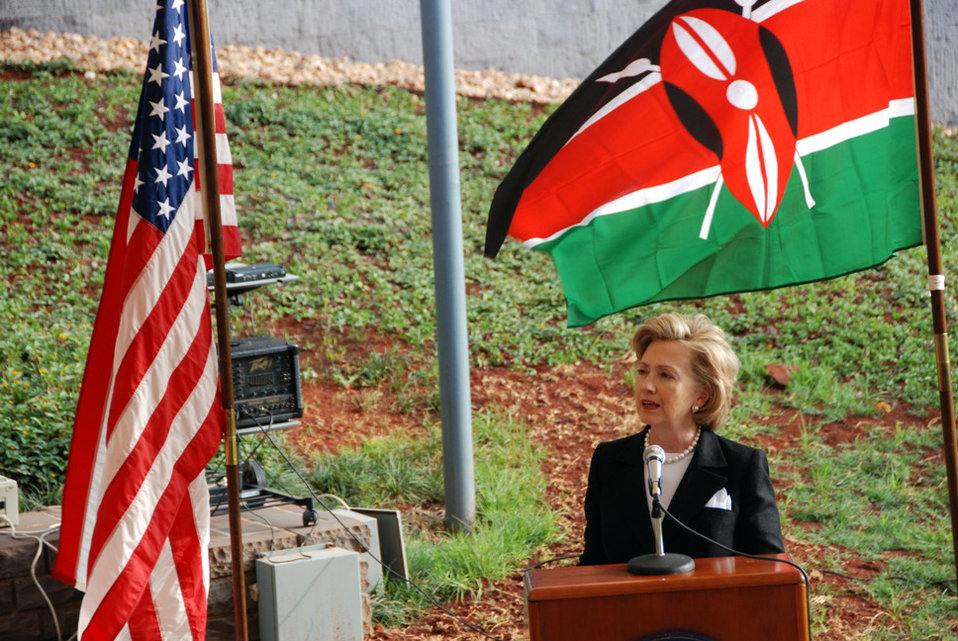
Secretary Clinton Addresses U.S. Embassy Staff in Kenya

U.S. Secretary of State Hillary Rodham Clinton addresses U.S. Embassy employees in Nairobi, Kenya August 6, 2009.